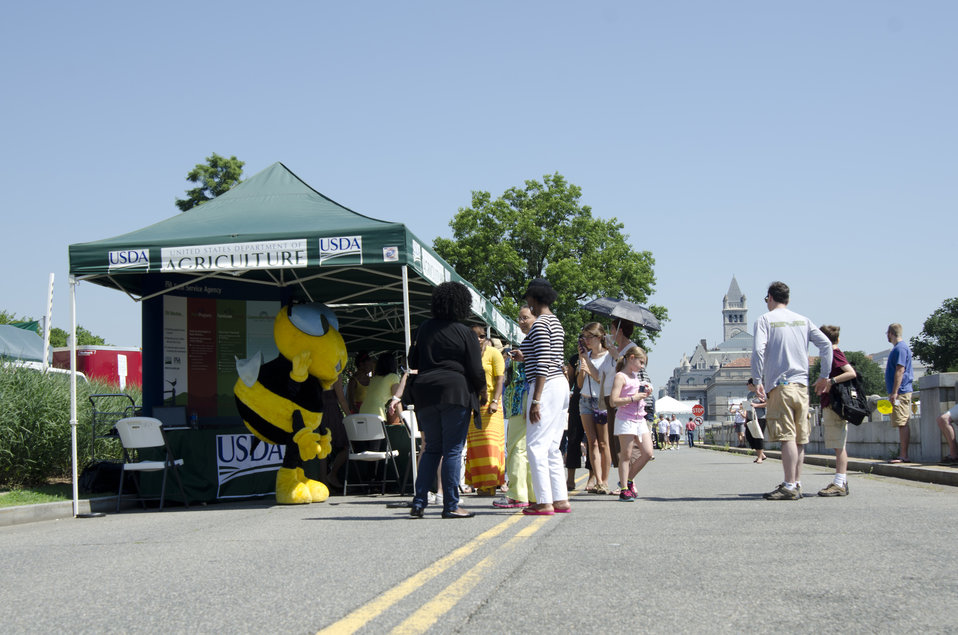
Peoples Garden Pollinator Display at the U.S. Department of Agriculture in Washington, DC, on Friday, June 21, 2013.